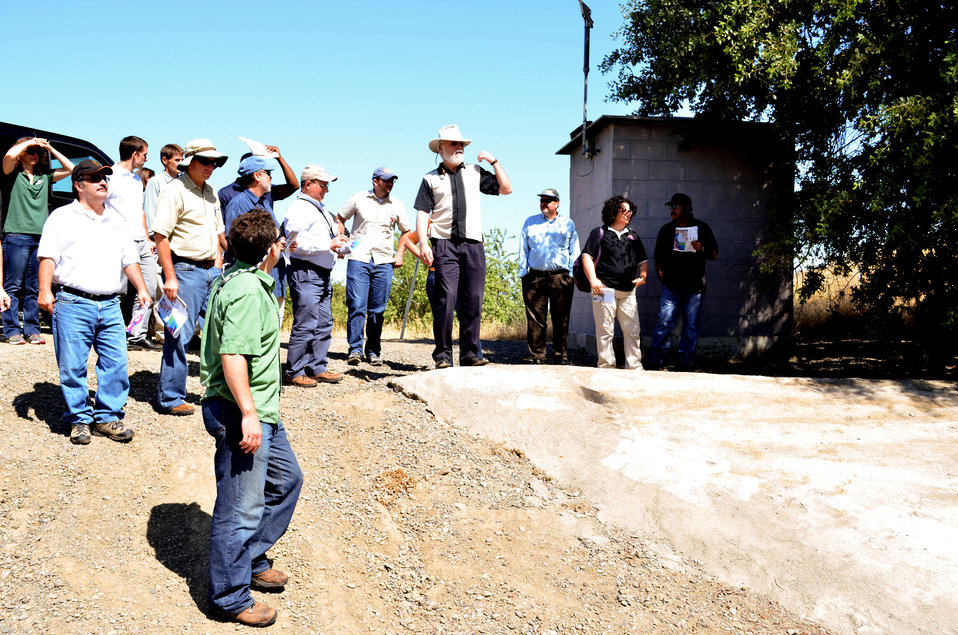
Taking the guided tour

130715-A-QE256-016 – U.S. Army Corps of Engineers Sacramento District staff take a guided tour of Cache Creek levees with officials from Woodland, Calif., and the California Department of Water Resources July 15, 2013. The district is looking at possible ways to reduce flood risk in the area.